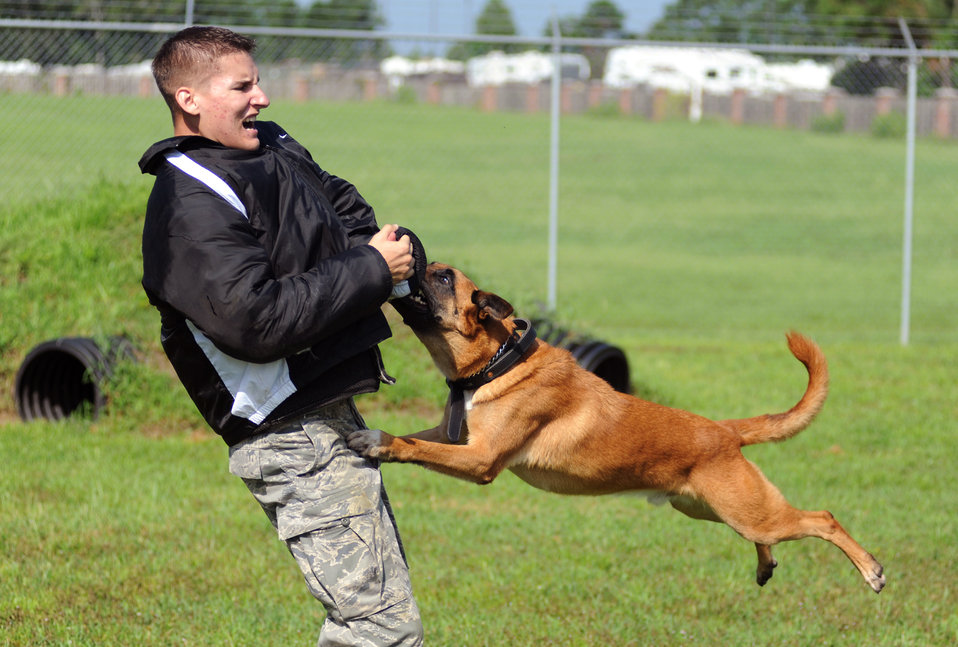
Gotcha!

Military working dog Arton latches onto Staff Sgt. Craig Martin during a controlled aggression exercise Aug. 20, 2010, on Joint Base Charleston, S.C. Arton is a Belgian Malinois, a breed that has a bite with a force in excess of 300 pounds per square inch. Sergeant Martin is a dog handler with the 628th Security Forces Squadron.